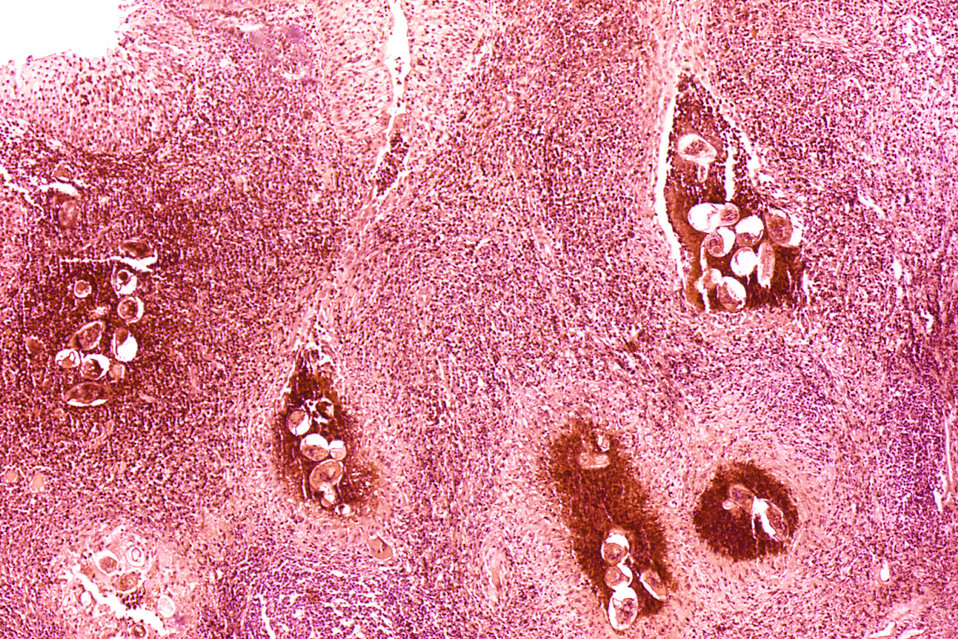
Histopathology of schistosomiasis haematobia, bladder